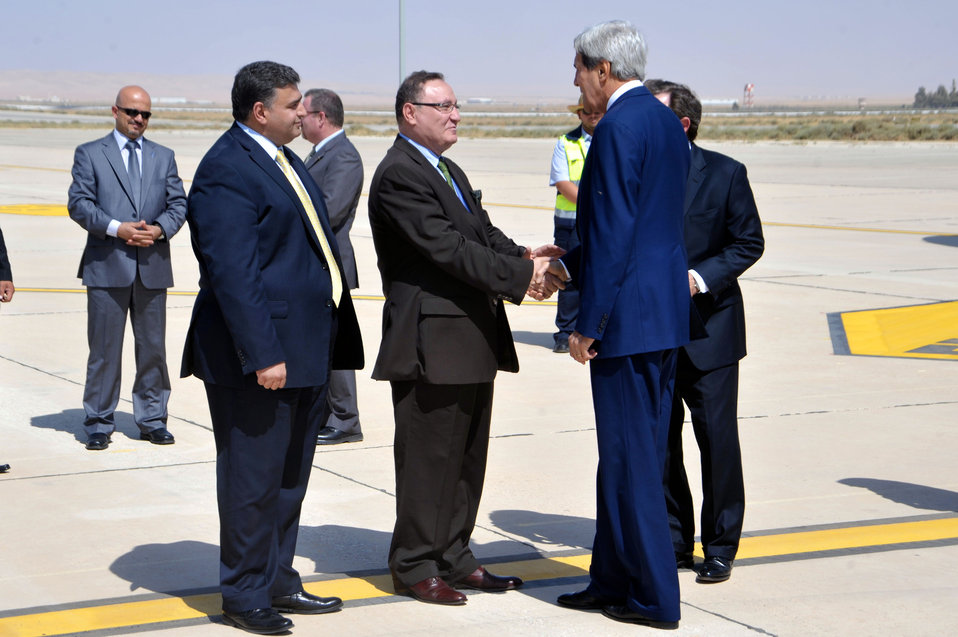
Secretary Kerry Is Greeted By Jordanian Officials

U.S. Secretary of State John Kerry is greeted by Jordanian Foreign Ministry officials Rasem Hashem and Majed Qatarmeh as he arrives in Amman, Jordan, for meetings with other government leaders, Arab leaders, and Palestinian Authority President Mahmoud Abbas on July 16, 2013.